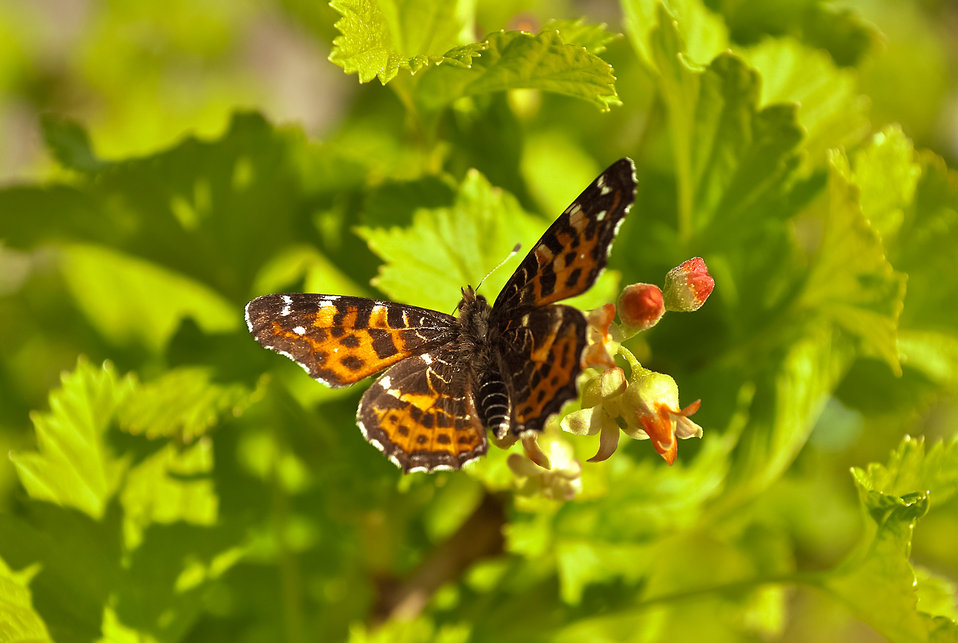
Summer pictures

Beautiful butterfly wings. green background..